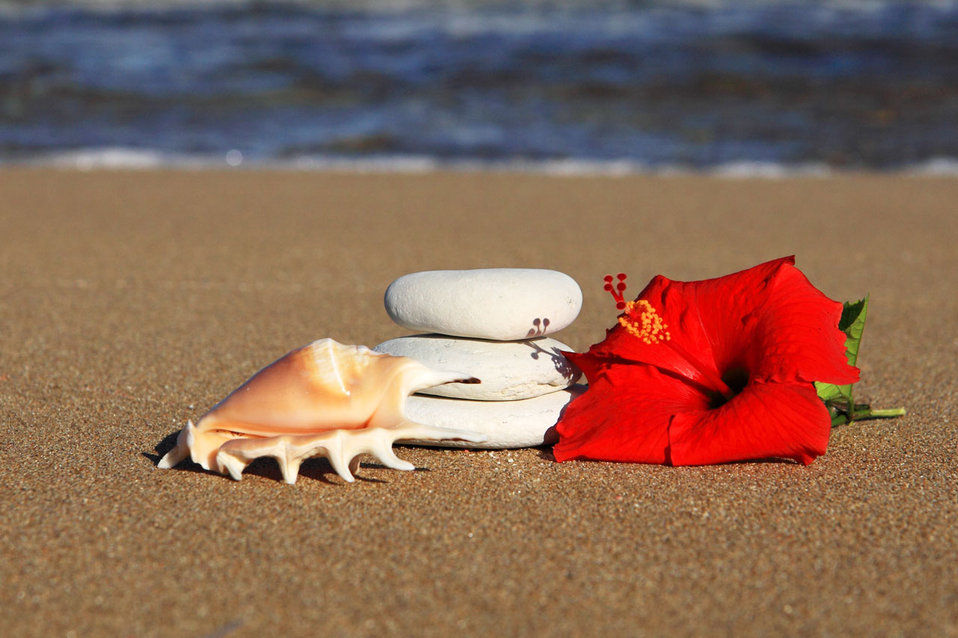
Idyllic beach

Pebbles, shell and hibiscus in sand with ocean in background.